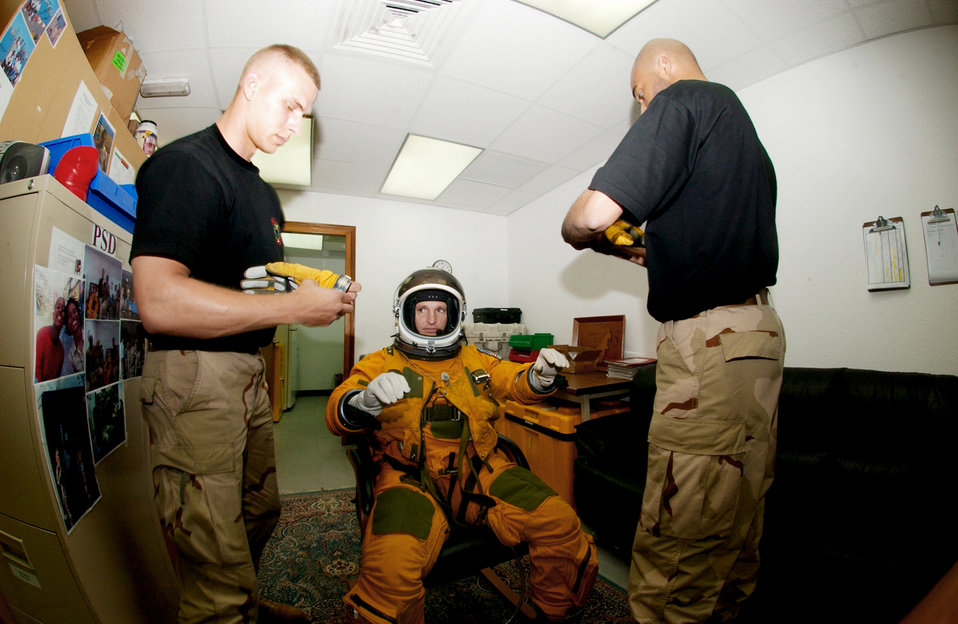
Life support team puts pressure on high-flying pilots

SOUTHWEST ASIA -- Senior Airman Duane Thompson (left) and Staff Sgt. Shann Elmore help Maj. Cory Bartholomew into his space suit before a flight in a U-2 reconnaissance aircraft. U-2 pilots wear space suits because they typically fly higher than 60,000 feet -- twice as high as a commercial airliner. Airman Thompson and Sergeant Elmore are life-support crewmembers with the 99th Expeditionary Reconnaissance Squadron's physiological support division. Major Bartholomew is a U-2 pilot with the 99th ERS.